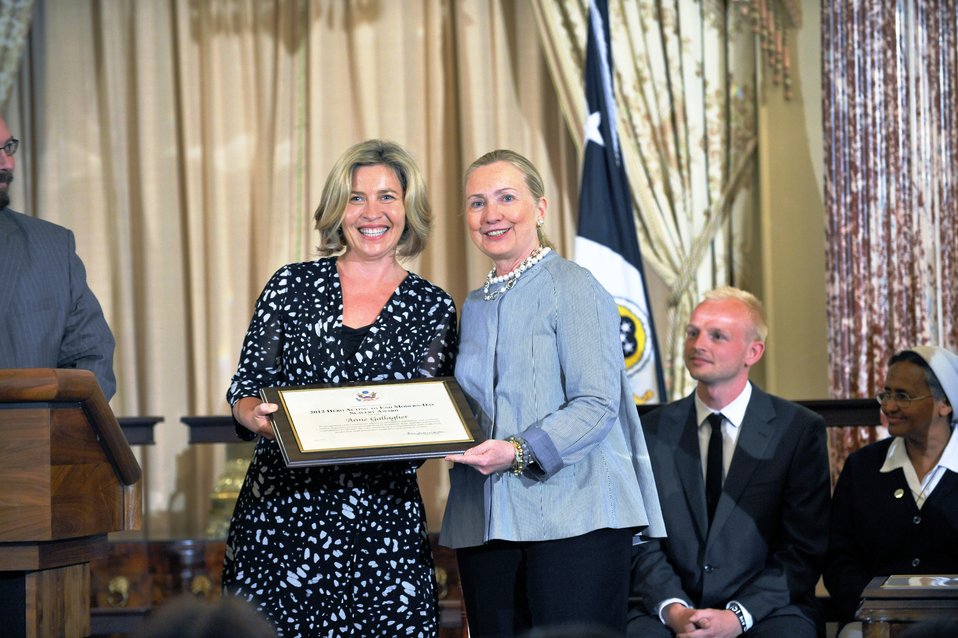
Secretary Clinton With TIP Hero Anne Gallagher

U.S. Secretary of State Hillary Rodham Clinton honors Anne Gallagher of Australia, a 2012 Trafficking in Persons (TIP) Report Hero, at the U.S. Department of State in Washington, D.C., on June 19, 2012.